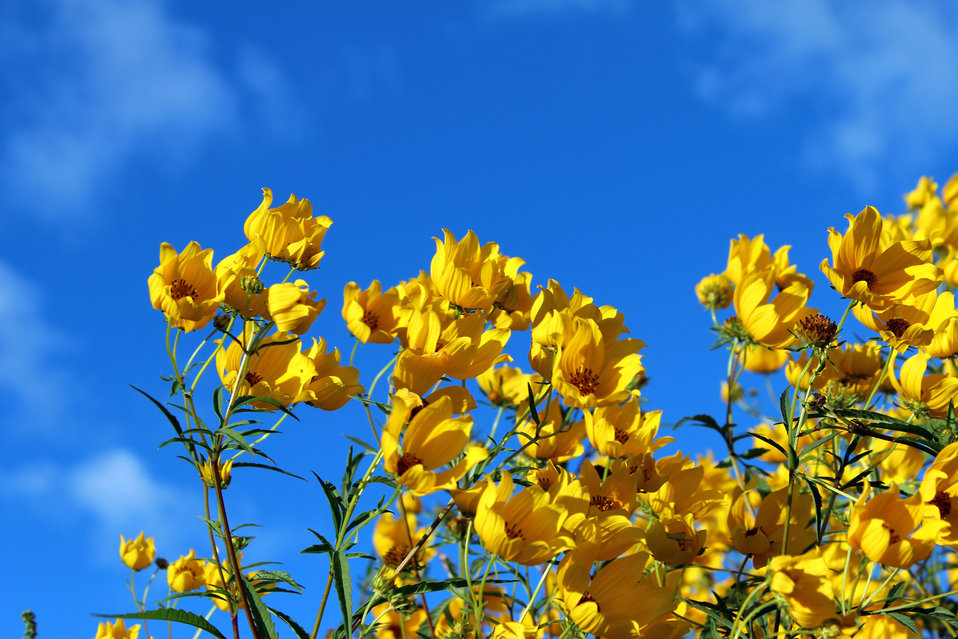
Sky meet flowers is a beautiful shot of bright yellow wildflowers against the beautiful summer sky..